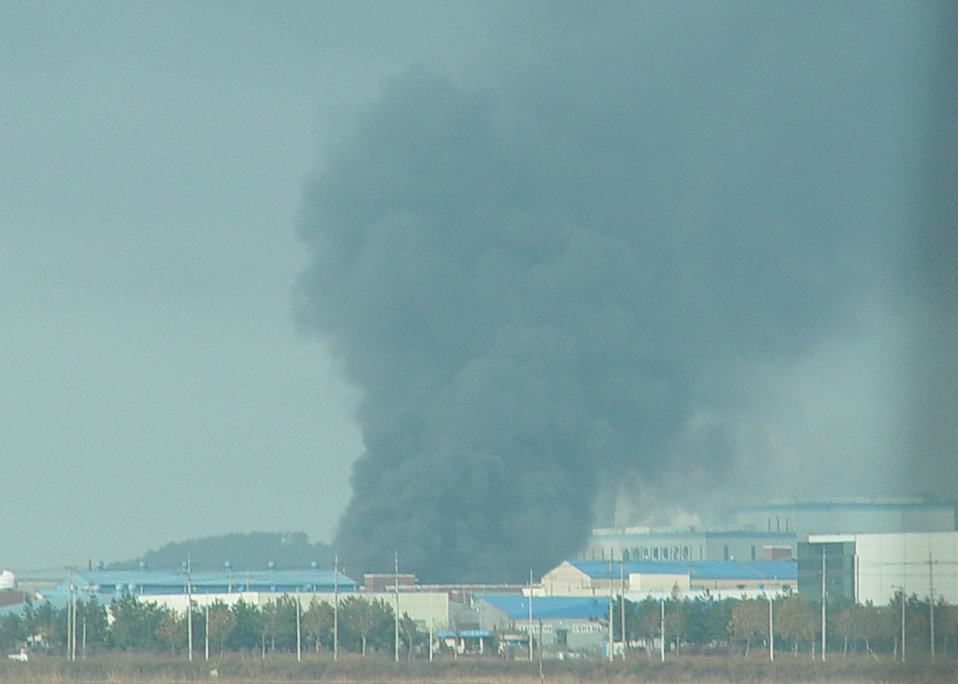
Kunsan firefighters assist local fire department

Smoke from an industrial building can be seen from the road here Dec. 3. Airmen from the 8th Civil Engineer Squadron fire department, assisted local fire departments to put out a large industrial fire.